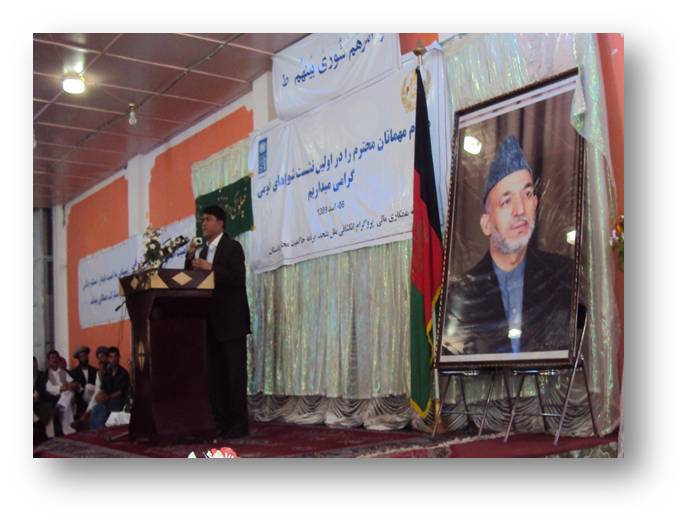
First Consultative Council